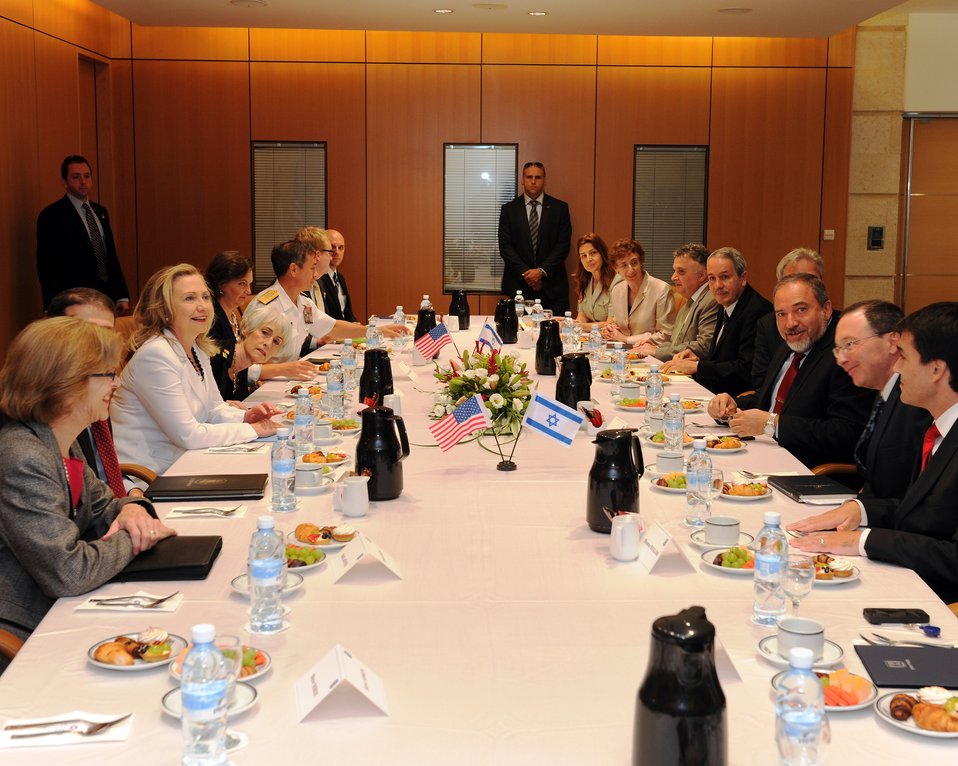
Secretary Clinton With Israeli Foreign Minister Lieberman

U.S. Secretary of State Hillary Rodham Clinton meets with Israeli Foreign Minister Avigdor Lieberman in Jerusalem on July 16, 2012.